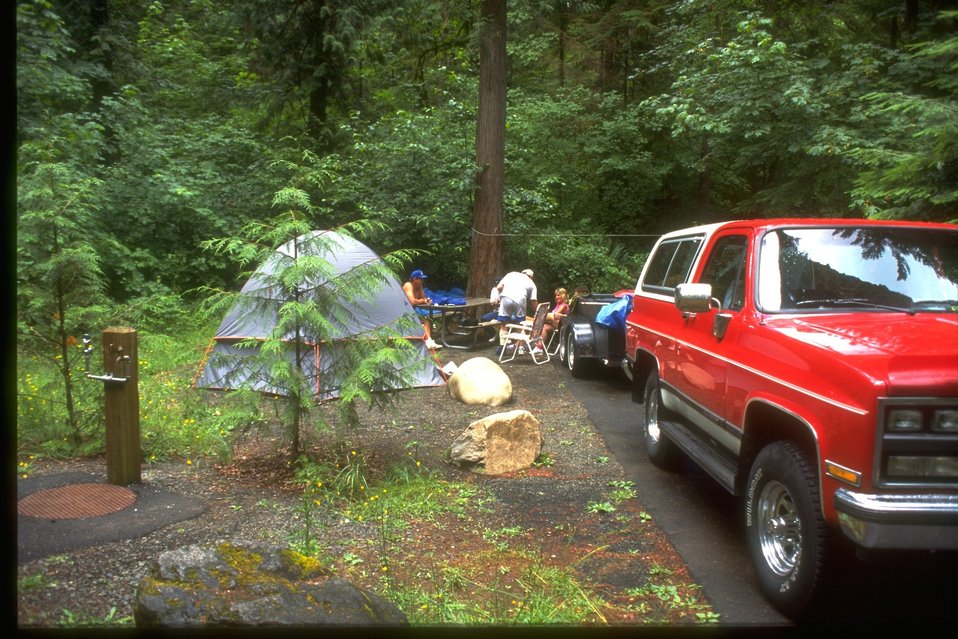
Campers camp at the Susan Creek Campground.